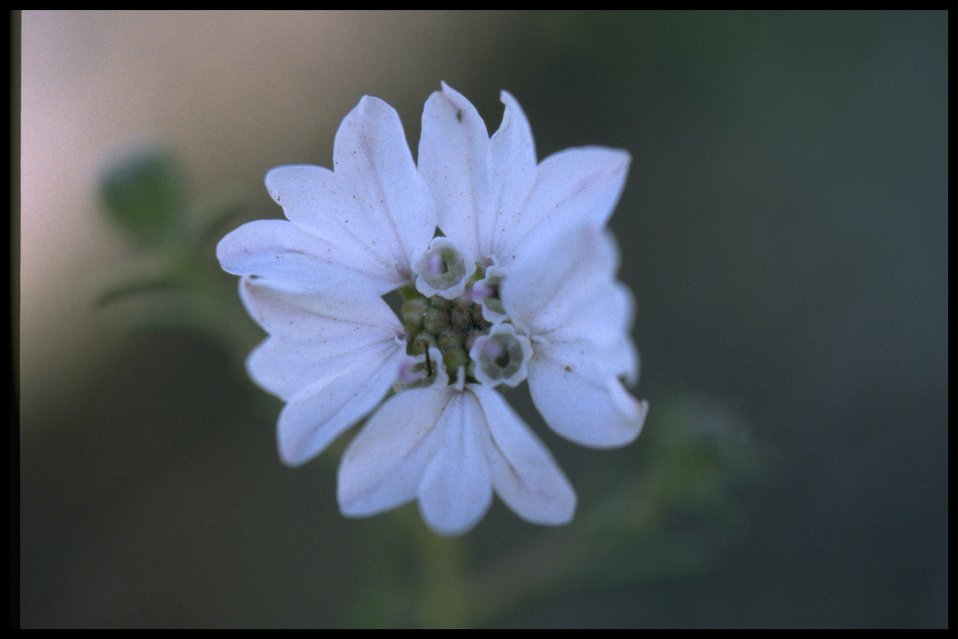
Closeup shot of Blepharipappus wildflower.